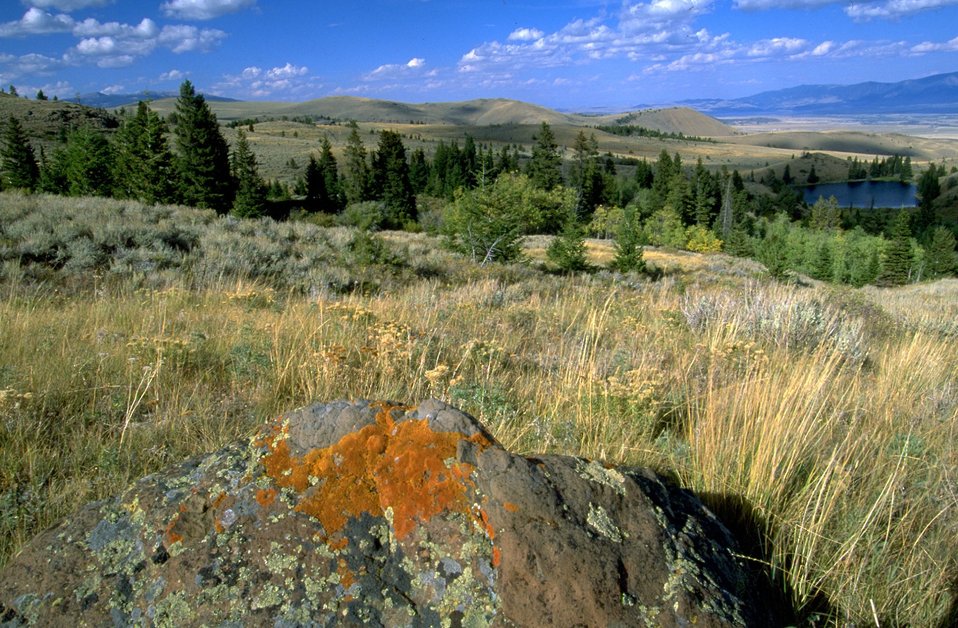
Axolotl Lakes Wilderness Study Area